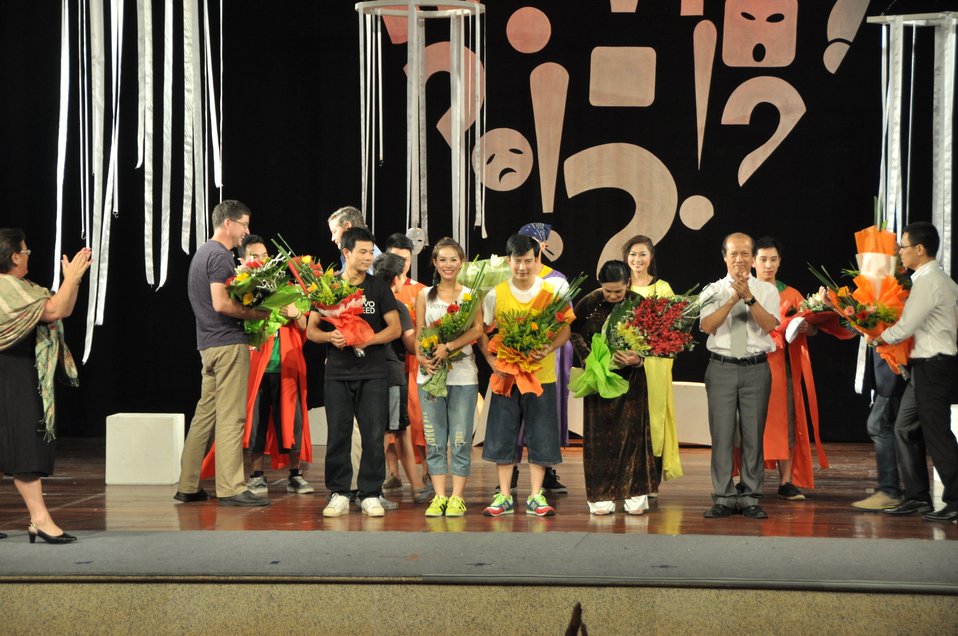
PEPFAR Musical Questions and Exclamations